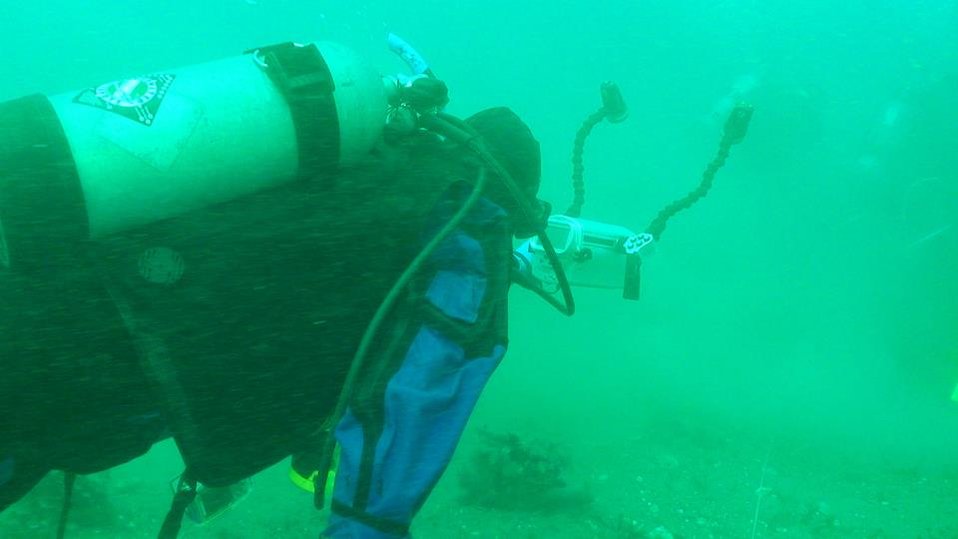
July 26, 2012 At the mouth of the Elwha River

USGS scientists and divers with the Lower Elwha Klallam Tribe, EPA, and Washington Sea Grant, went underwater to study the impacts to the Strait of Juan de Fuca now that removal of the Elwha River dams is well underway.

The removal project is releasing sediment that has accumulated behind the dams for nearly 100 years. The flow and deposition of that sediment can have a variety of effects on marine plants and animals; including burial, inhibition of aquatic reproduction, light reduction, damage to animal gills and filter feeding structures, and alteration of species interactions with their different tolerances and responses to the sediment.

For more information, see: www.usgs.gov, www.usgs.gov/elwha.

Photo of Steve Rubin, USGS, conducting a video transect along a permanent sampling station, revisited each year before, during, and after dam removal.